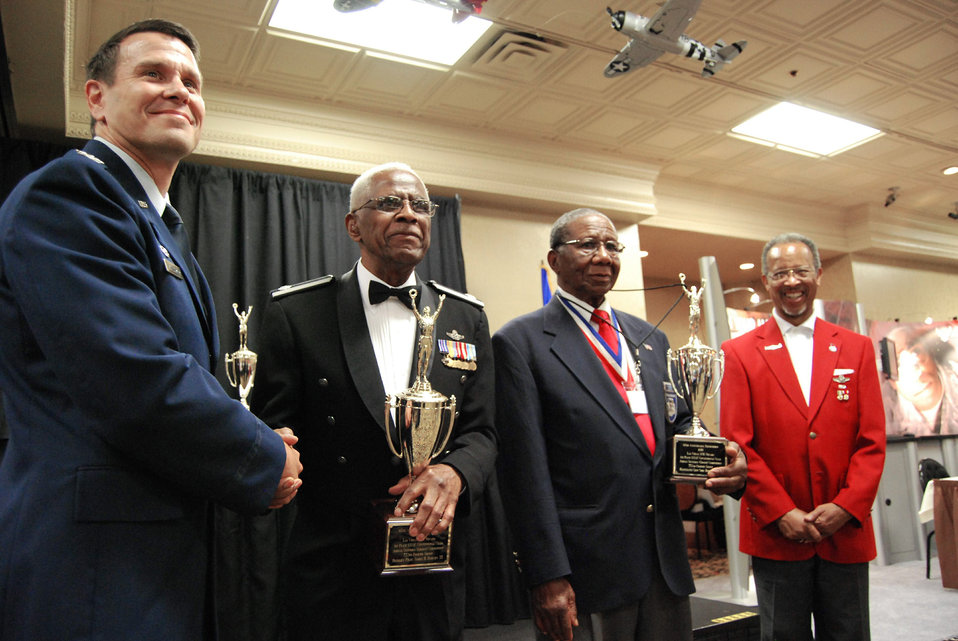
'Top Guns' receive awards at Tuskegee Airmen convention

Col. John Montgomery (left) pauses for a photo with retired Lt. Col. James Harvey, retired Chief Master Sgt. Buford Johnson and Tuskegee Airmen Inc. President Russell Davis during the 60th anniversary recognition ceremony of the